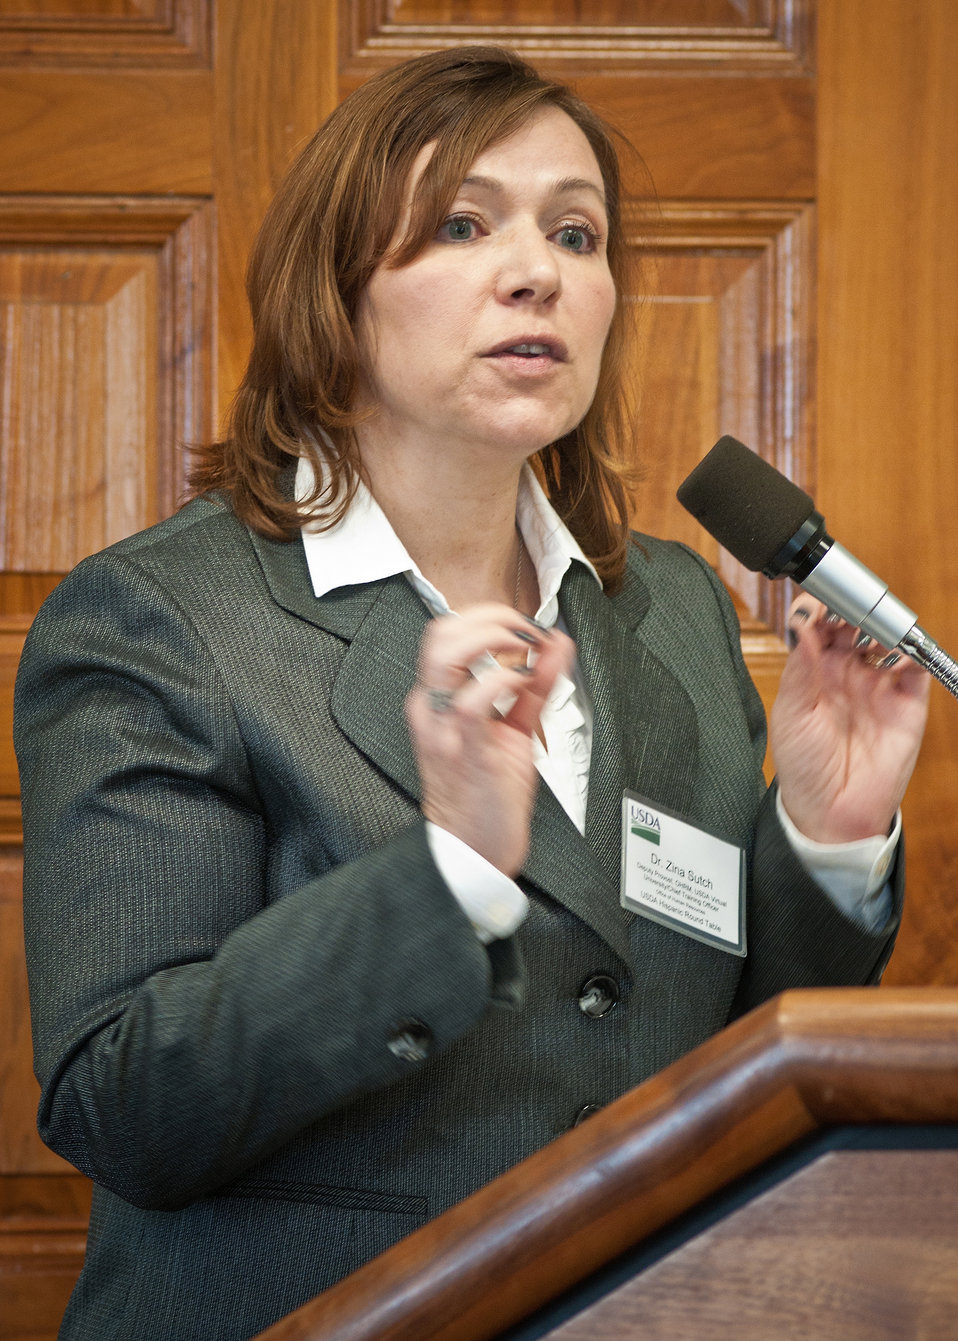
Dr. Zina Sutch, Training Officer, Office of Human Resources Management discussed student recruitment and retention at the United States Department of Agriculture Hispanic Roundtable at the United States Department of Agriculture, Monday, December 5, 2011 in Washington, DC. The roundtable focused on recruitment, retention and employee development for the purpose of developing the USDA Hispanic recruitment Plan. The roundtable hosted several national Hispanic partners and recognized USDA Hispanic organizations and associations.